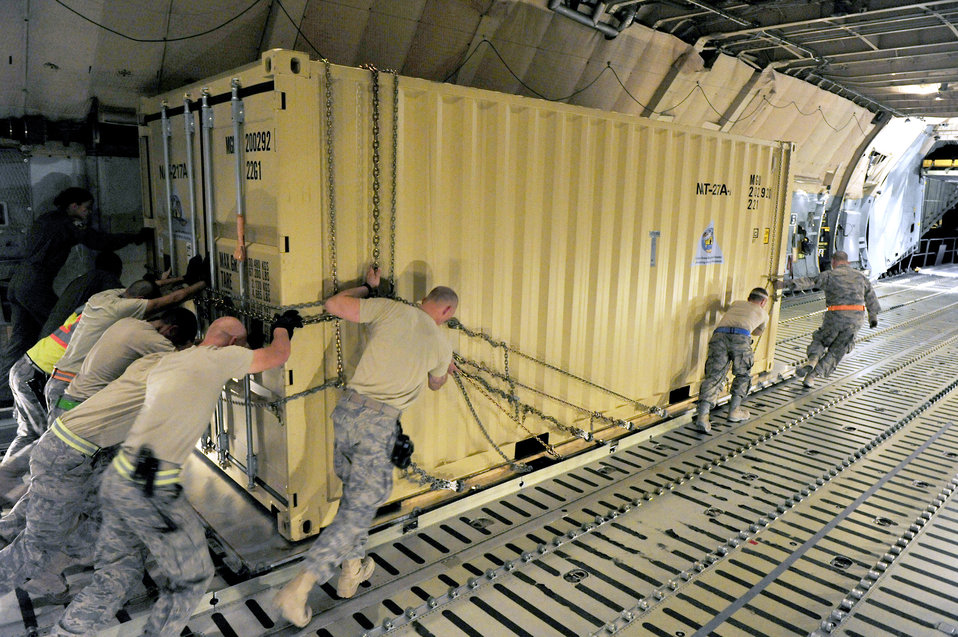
CRG

Airmen from the 621st Contingency Response Wing at Joint-Base McGuire-Dix-Lakehurst, N.J., push a prefabricated shelter facility from a C-5B Galaxy onto a waiting 60k cargo loader July 1, 2010 at Camp Marmal, Afghanistan. Thousands of tons of supplies have been processed in the past few weeks by teams of CRW Airmen as forces called up by the presidentially-directed surge of manpower and equipment have been arriving into Afghanistan.